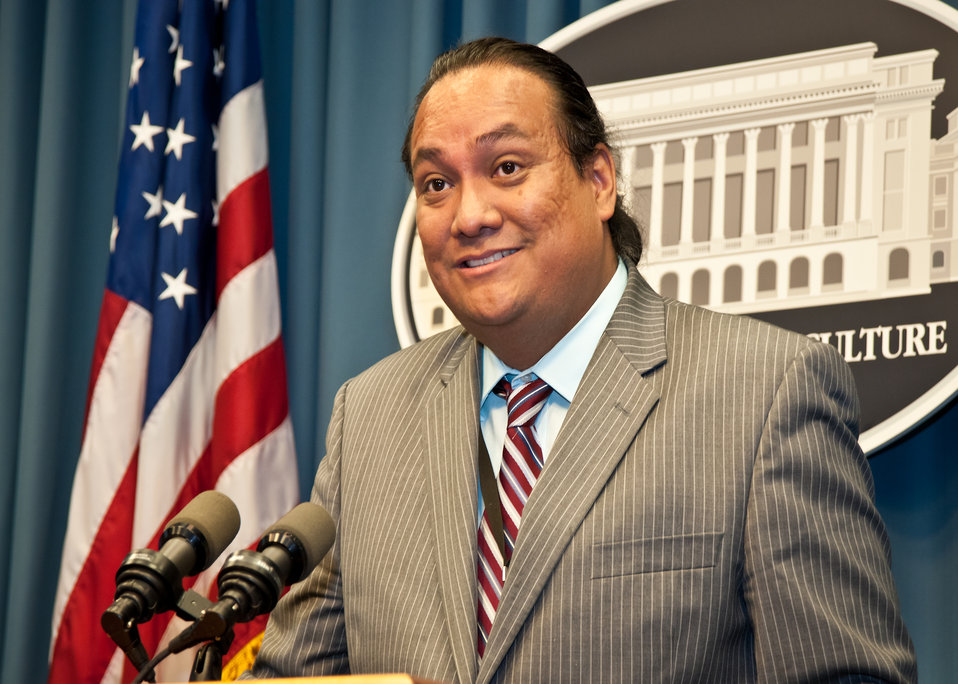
Agriculture Tribal Relations representative Lawrence Shorty welcomes United States Department of Agriculture (USDA) Hispanic Association of Colleges and University (HACU) and Tribal College summer interns during their orientation at USDA in Washington, DC, Monday, Jun 6, 2011. The HACU/Tribal College National Internship Program represents more than 400 colleges and universities committed to higher education in the U.S., Puerto Rico, Latin America, Spain and Portugal and places student interns each year with federal agencies in Washington, DC or in field offices around the country.